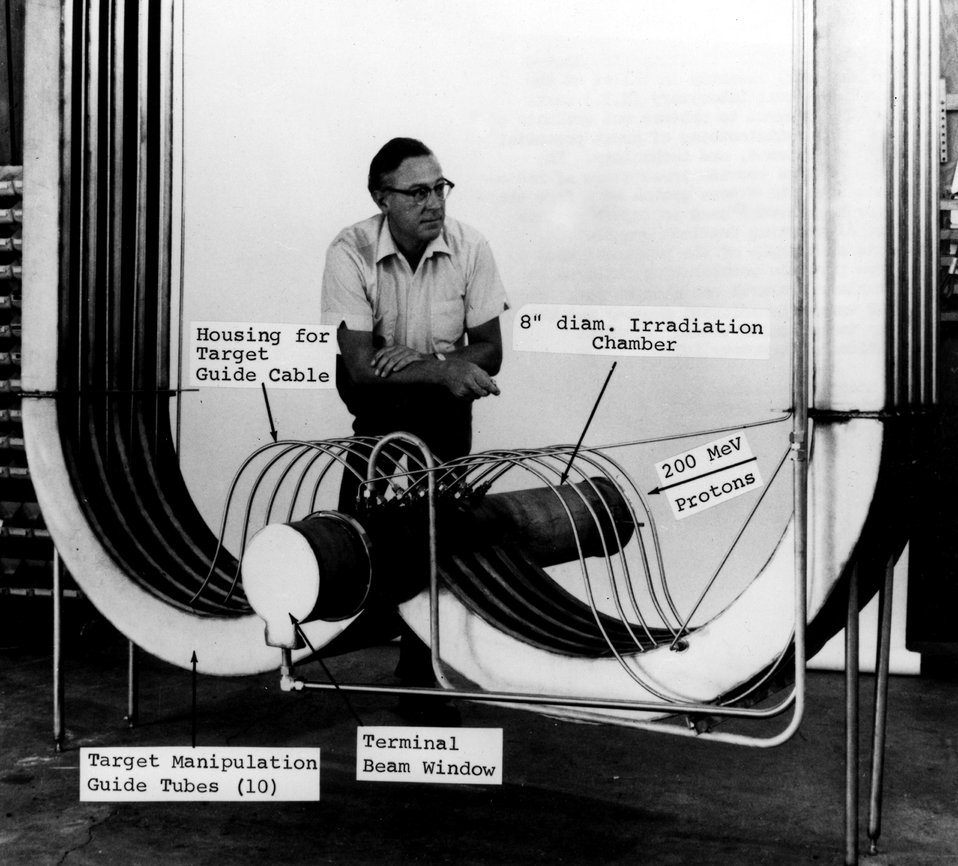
The 'BLIP' facility recently installed at the
AEC's Brookhaven National Laboratory marks the beginning of a program to produce and evaluate a whole new family of radioisotope of great potential value in medicine, science, and technology.